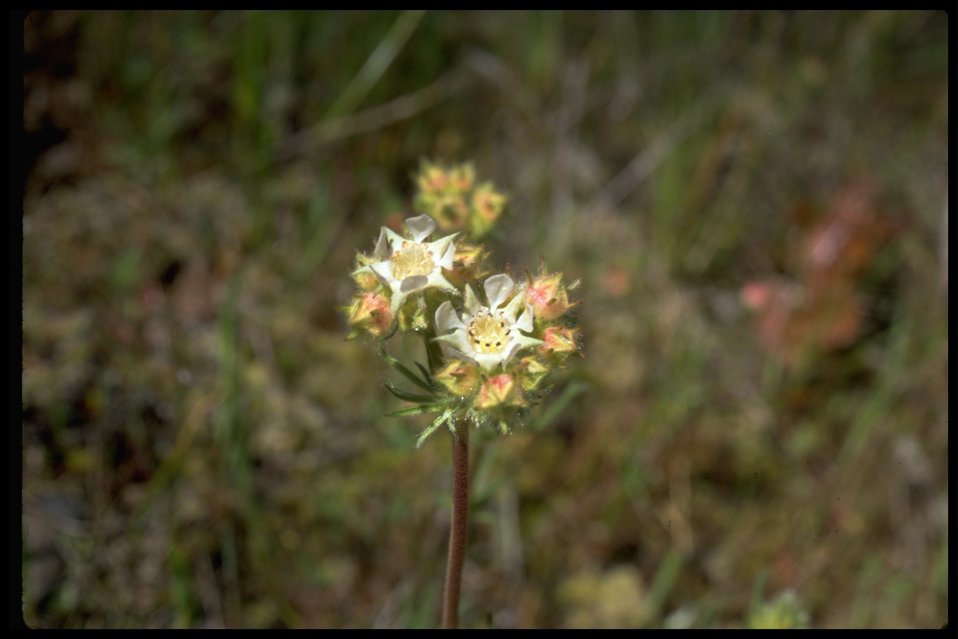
Horkelia congesta ssp. congesta, commonly known as the Dense-flowered Horkelia.